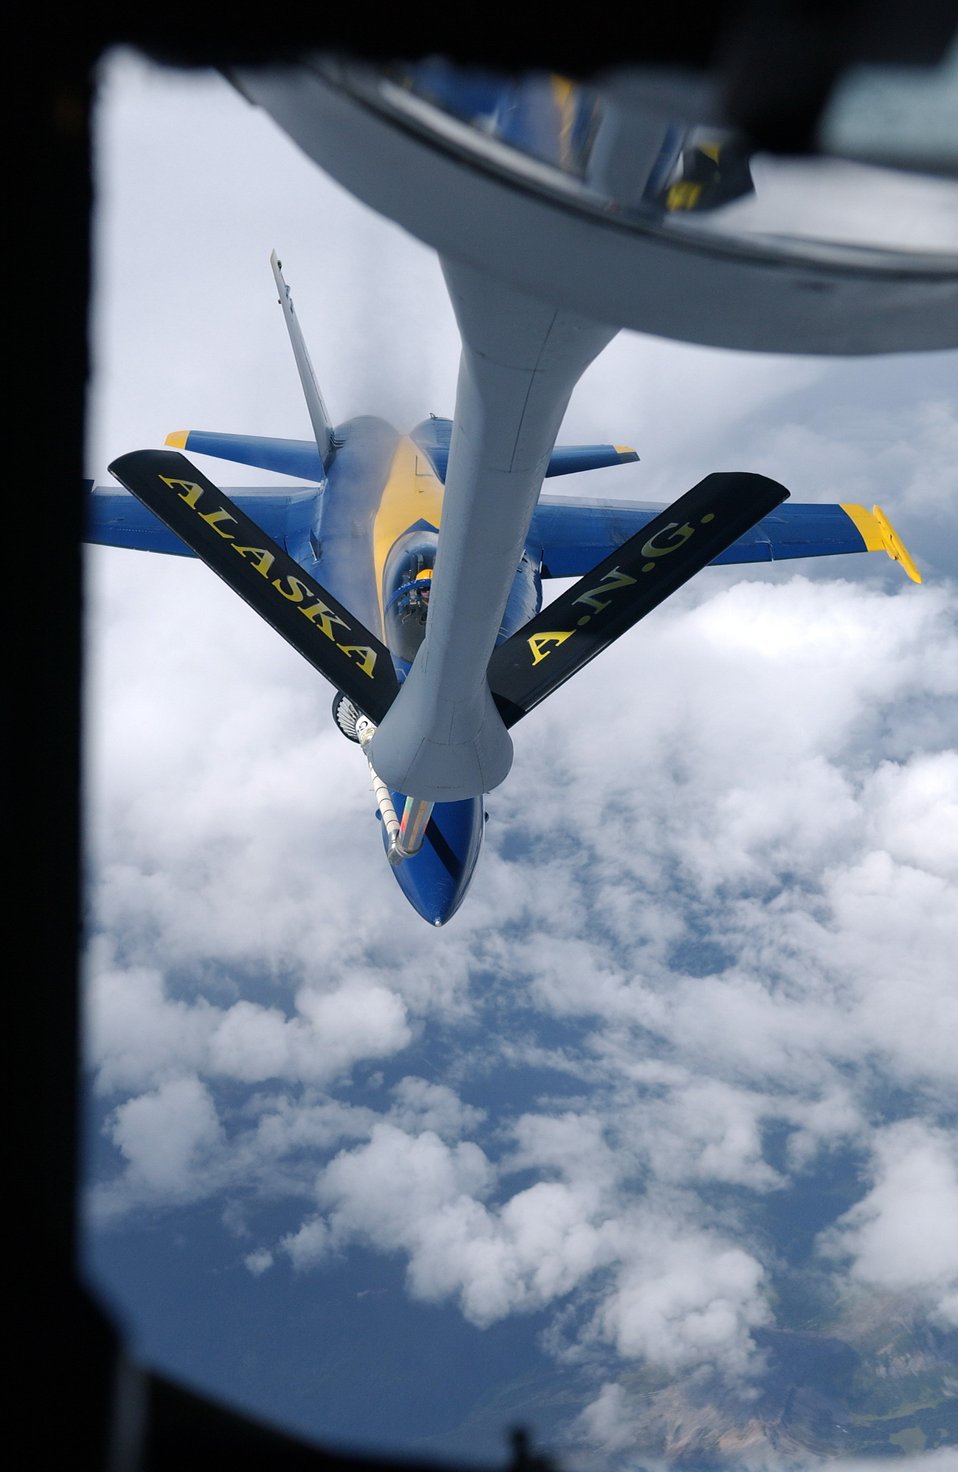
Blue Angels over Alaska

A KC-135 Stratotanker refuels an F/A-18 Hornet from the Navy's Blue Angels on its way from an air show at Elmendorf Air Force Base, Alaska, on Aug. 14. The KC-135 is with the 168th Air Refueling Wing at Eielson AFB, Alaska.